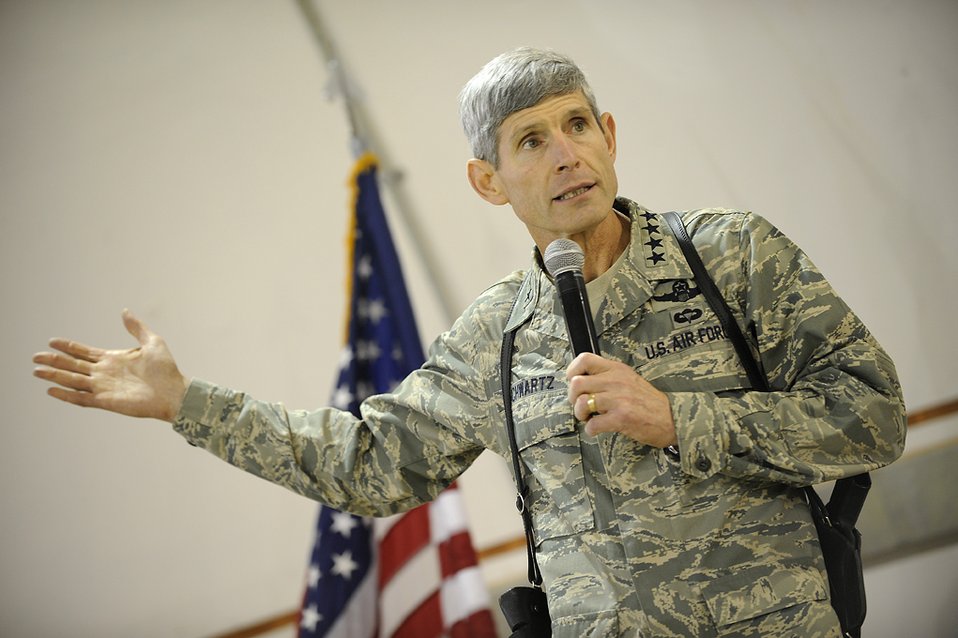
Chief of staff wraps up Middle East tour at Joint Base Balad

Air Force Chief of Staff Gen. Norton Schwartz speaks during an Airman's Call at Joint Base Balad, Iraq, Oct. 25. General Schwartz visited eight installations in the U.S. Central Command area of responsibility and the Horn of Africa with Chief Master Sgt. of the Air Force Rodney McKinley.